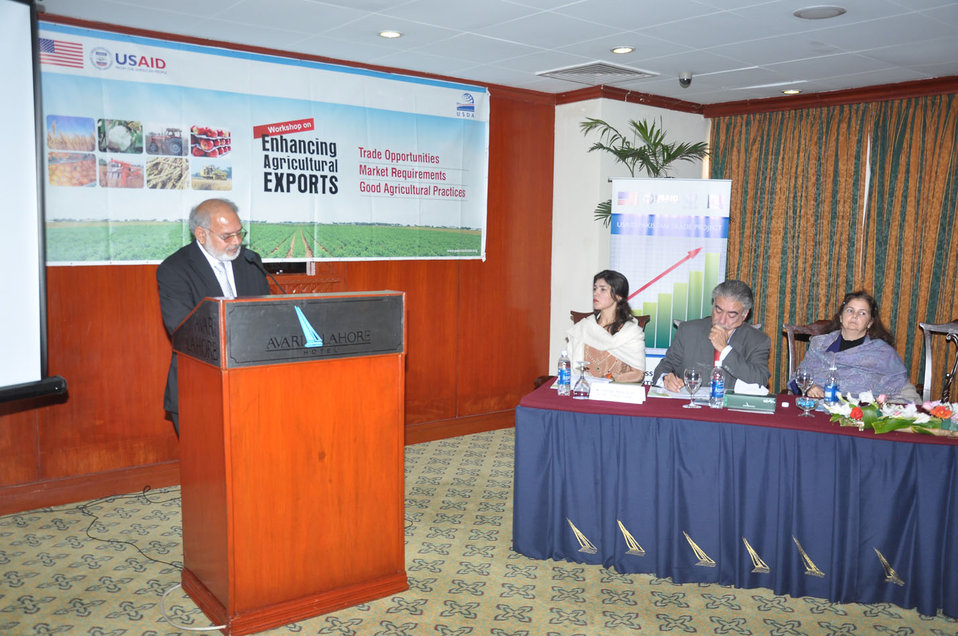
Distinguished guest speaking at the G workshop organized by USAID Trade Project.